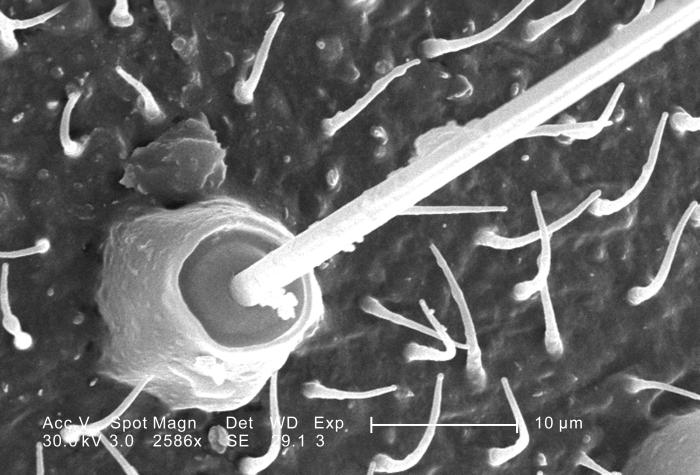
This scanning electron micrograph (SEM) depicted a highly magnified view of the exoskeletal sensorial hairs, or 'setae', of an unidentified green-colored flying insect found outside on the ground in the Decatur, Georgia suburbs; Magnified 2586x. Some of these hairs are very large, and less numerous than their smaller versions. The debris covering the organism is mainly vegetative in nature, composed primarily of pollen granules, and disintegrated plant fibers.